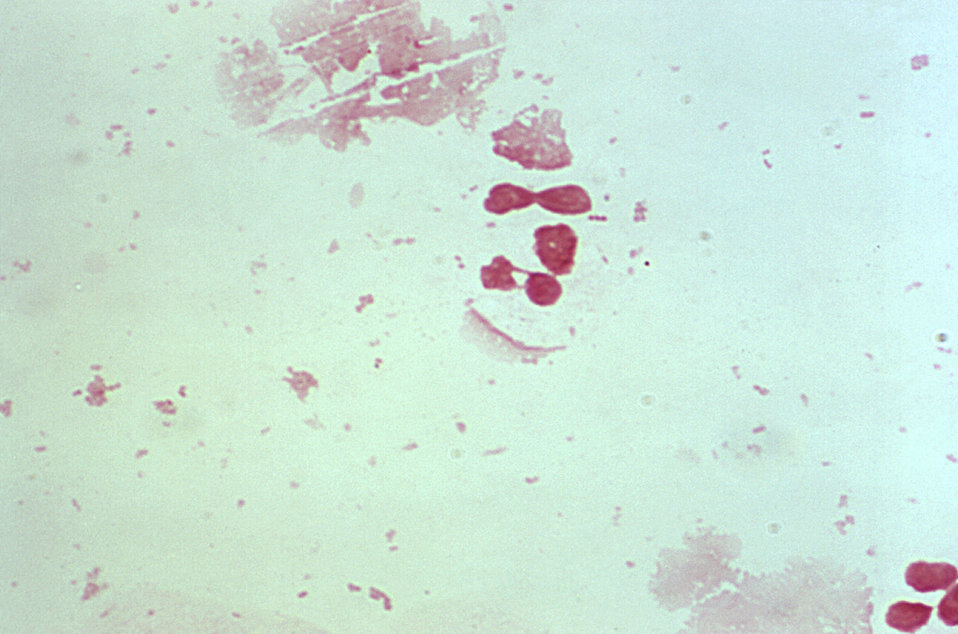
This photomicrograph of a Gram-stained urethral exudate sample from a male with urethritis, revealed the presence of pleomorphic extracellular organisms. The culture was found to be positive for the presence of Neisseria gonorrhoeae, unlike PHIL 2307, which proved to be negative for N. gonorrhoeae.